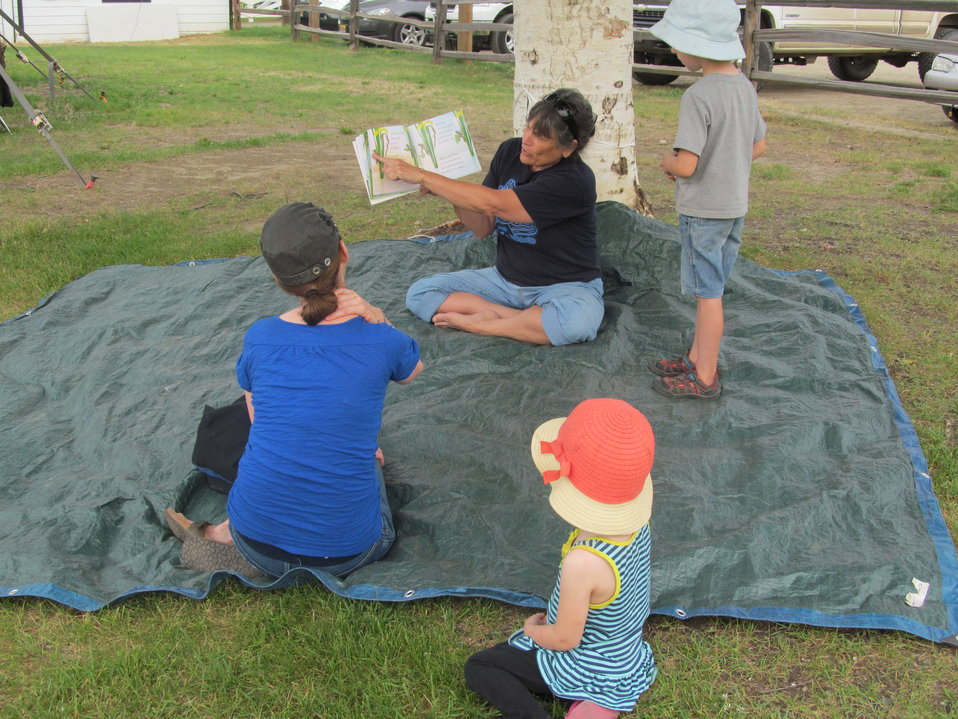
Story time! Friends of Alaska NWR volunteer Henrietta reads the book, Are you a Dragonfly?

(USFWS)